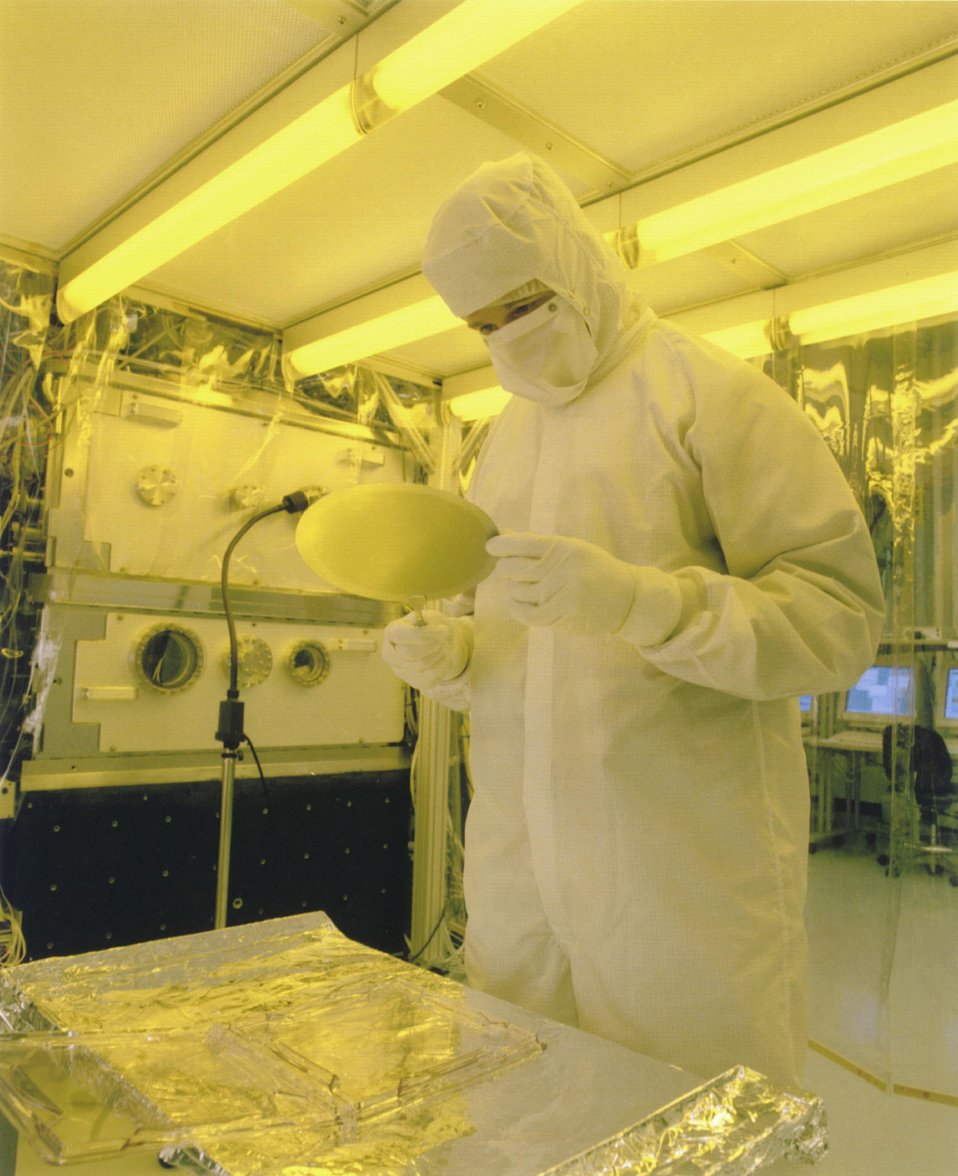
SNL ENGINEER INSPECTS A WAFER FRESHLY PRINTED FOR THE ENGINEERING TEST STAND.

THE ENGINEERING TEST STAND IS A PROTOTYPE TOOL FOR PATTERNING NEXT-GENERATION MICROCHIPS. THE ENGINEER IS WORKING UNDER YELLOW LIGHTS THAT HAVE A FUNCTION SIMILAR TO THE RED 'SAFE LIGHTS' OF A PHOTOGRAPHY ROOM.